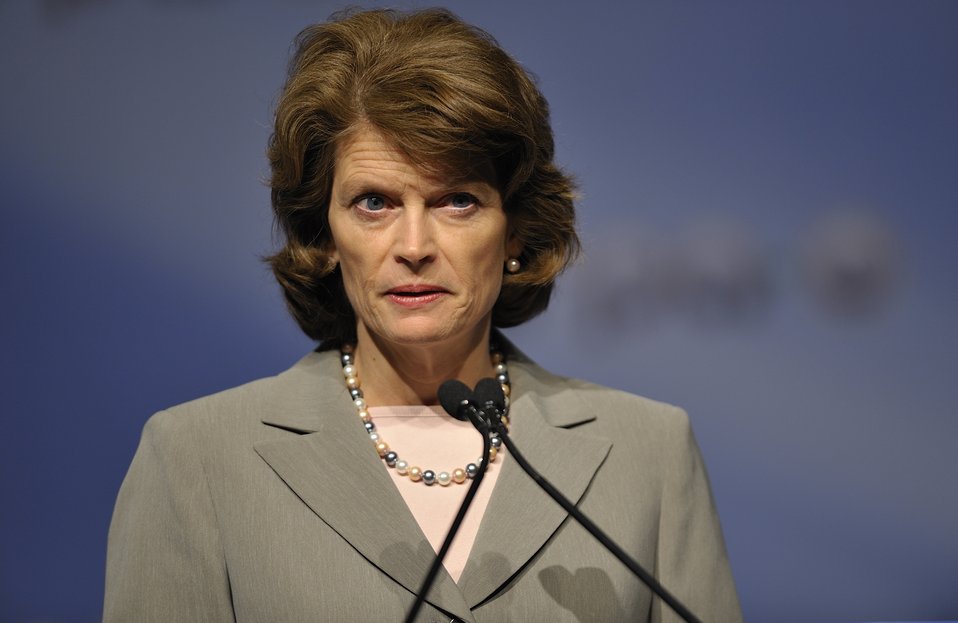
ARPA-E Energy Innovation Summit 2011, 33 of 83

Senator Lisa Murkowski (I-AK)